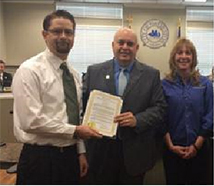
Galveston Supports NDFW

The City of Galveston recently honored the UTMB Center for Addiction Research with a Proclamation in support of National Drug Facts Week (NDFW), which was held on Jan. 27th through Feb. 2nd. This initiative, sponsored by the National Institutes of Health, encourages teens to ask questions about drug abuse and addiction, and, in return, receive scientifically-based answers from top experts in the field. For the past several years, the Center has partnered with the Bay Area Council on Drugs & Alcohol to support NDFW activities at local middle and high schools.
Pictured L to R: Dr. Jonathan Hommel, Assistant Professor, Pharmacology & Toxicology and member, Center for Addiction Research; Norman Pappous, Galveston City Council - District 4; and Mary Beth Trevino, Outreach Coordinator, BACODA.